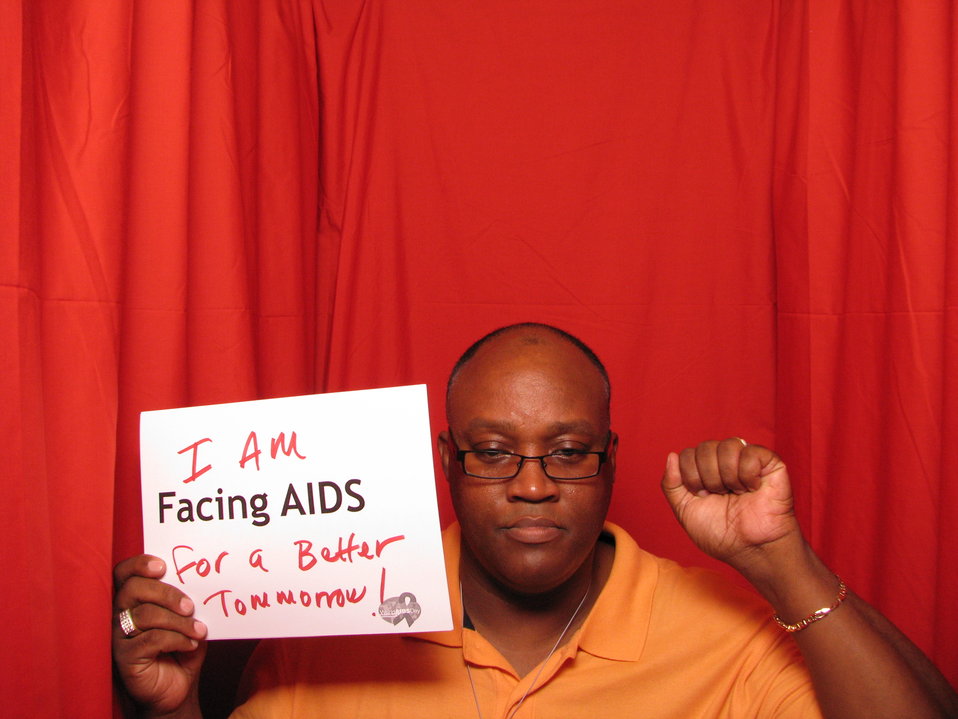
I AM FACING AIDS for a better tomorrow!

From the AIDS.gov photo booth at the U.S. Conference on AIDS, September 2010 (Orlando, FL).